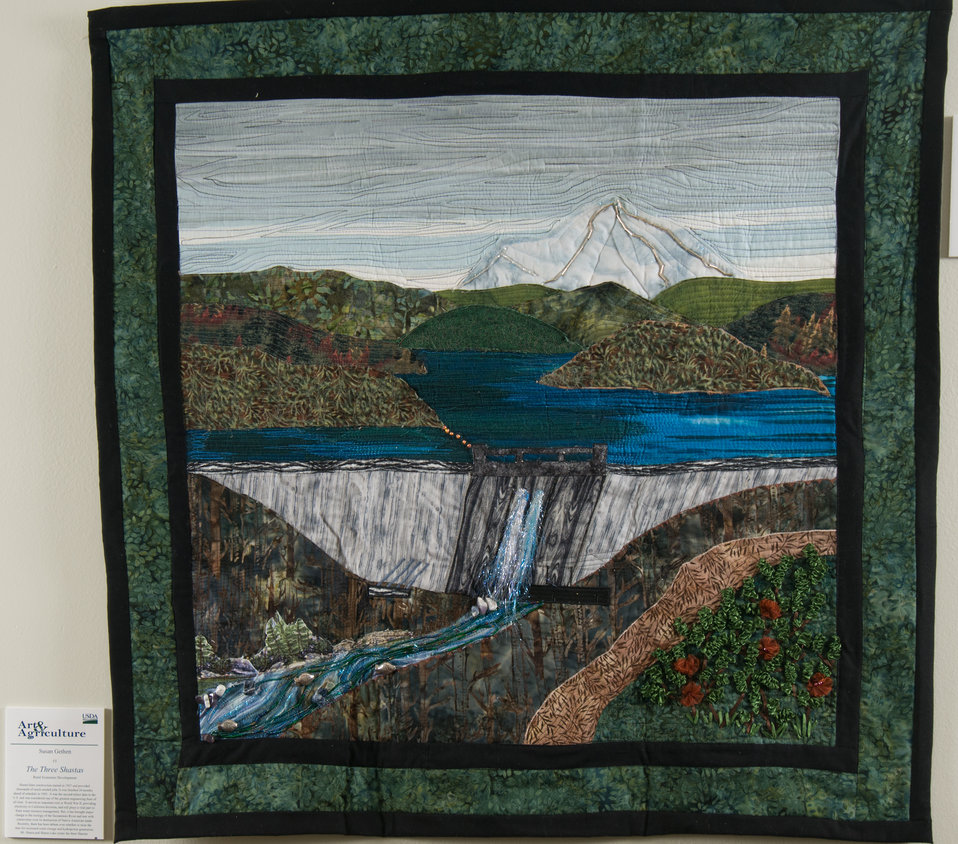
Online Viewer's Choice entries of the 2013 Art & Agriculture, Tuesday, July 9, 2013, in the South Building, Washington, D.C. Themes were expressed by employees from across the department and the contest was open to full-time and part-time USDA employees. Winning artwork will be displayed till the end of the year. U.S. Artistic expression is a creative outlet that is vital for an individual to grow and develop.